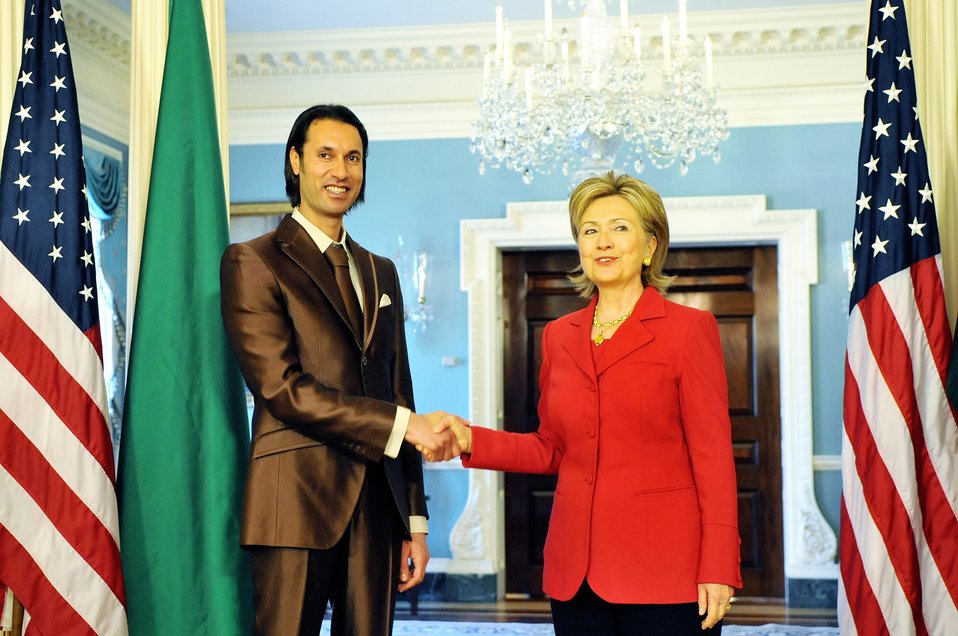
Secretary Clinton Meets With Libyan National Security Advisor

U.S. Secretary of State Hillary Rodham Clinton meets Libyan National Security Advisor Dr. Mutassim Qadhafi at the U.S. Department of State in Washington, DC April 21, 2009.